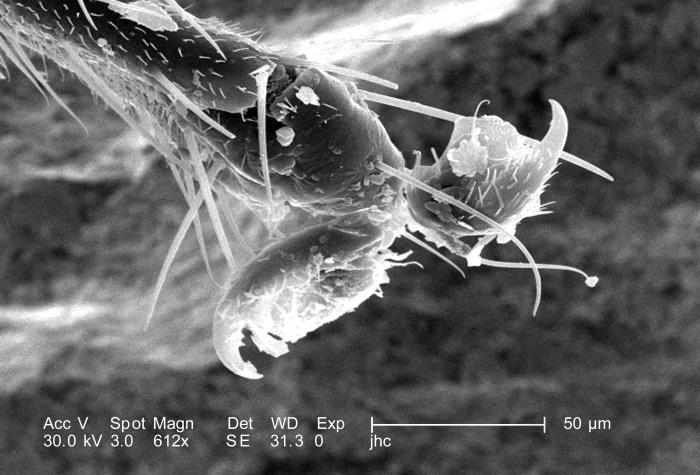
Moderately magnified 612X, this scanning electron micrograph (SEM) revealed some of the morphologic features located at the distal end of an unidentified 1/4"-sized black flying insect's leg. The arthropod also displayed a small red mark on its dorsum. In this particular view you'll note the juxtaposed hooks, which provide the organism with a firm grasp while maneuvering through its environmental. Also notice that the two hooked appendages are positioned in opposition to one another. See PHIL 9923 and 9924 for more highly magnified views of this anatomical configuration.